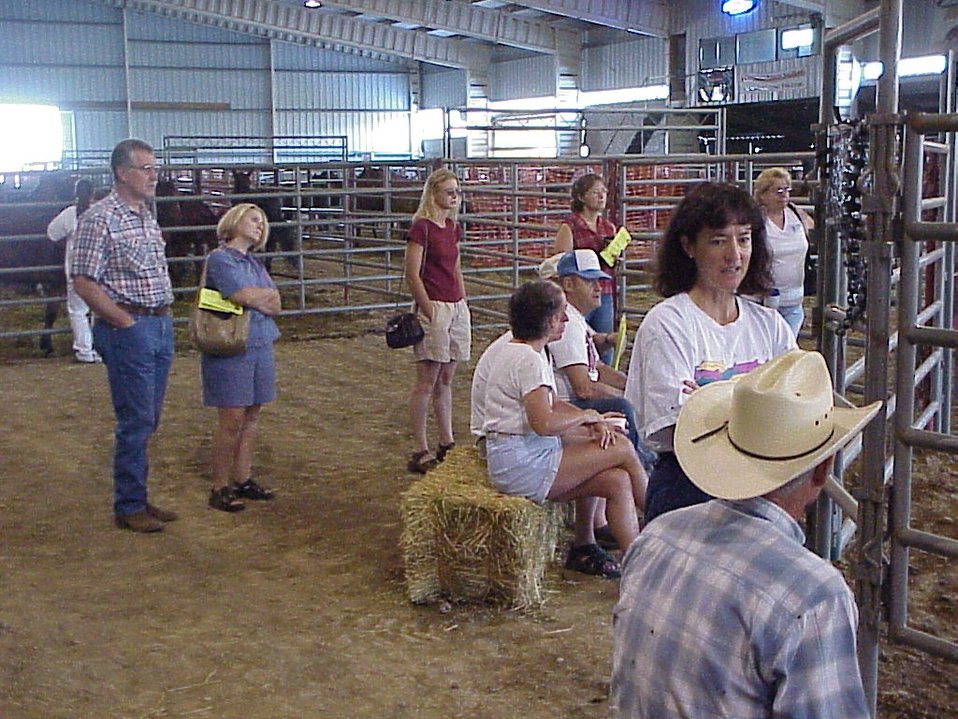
Lewiston Wild Horse and Burro Adoption Program Auction WHB indoor auction Cottonwood Field Office UCSC Upper Columbia Salmon Clearwater District